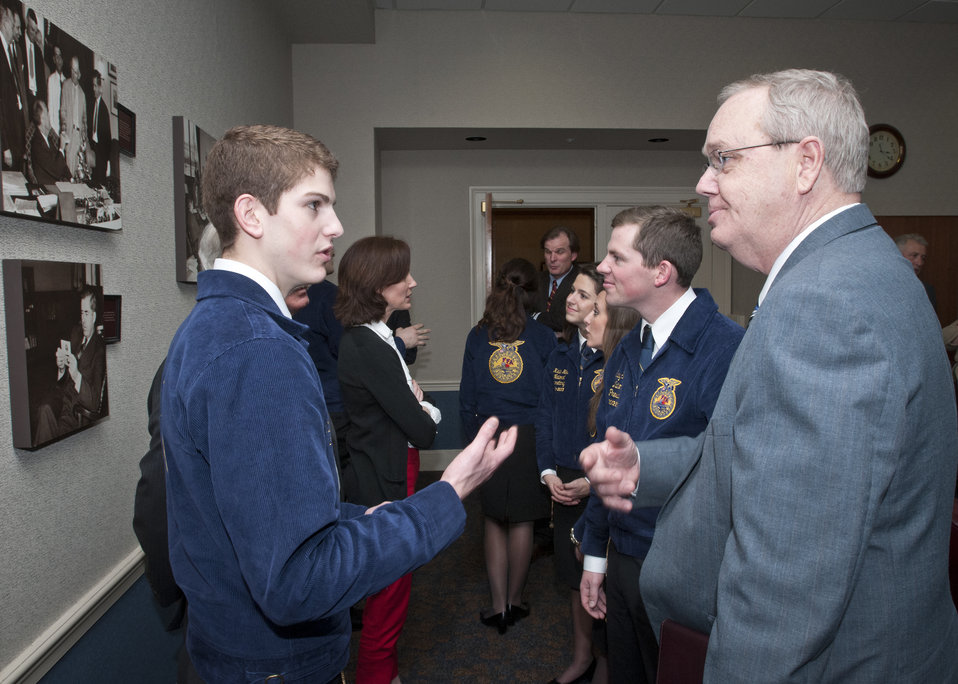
Agriculture Under Secretary for Rural Development (RD) Dallas Tonsager talks to FFA National Central Region Vice President Brennan Costello in the Wallace room at the U.S. Department of Agriculture (USDA) in Washington, D.C., on Wednesday, Jan. 16, 2013.